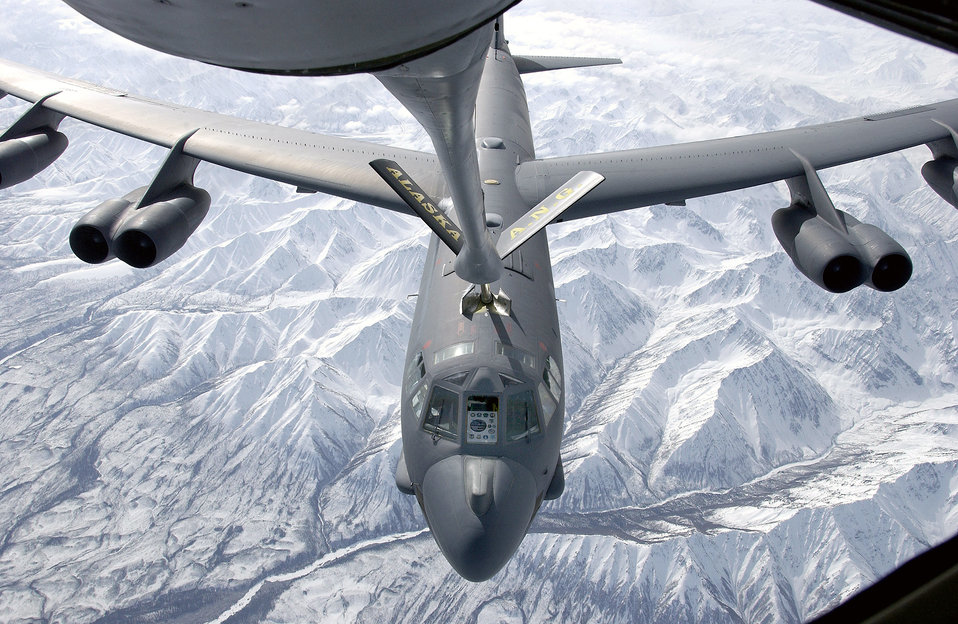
The Alaskan pipeline

OVER ALASKA (AFPN) -- A B-52H Stratofortress receives fuel over Alaska during a recent mission. The B-52H Avionics Midlife Improvement project completed two missions to test new hardware and software upgrades. With the upgrades, B-52s will continue flying until 2040.